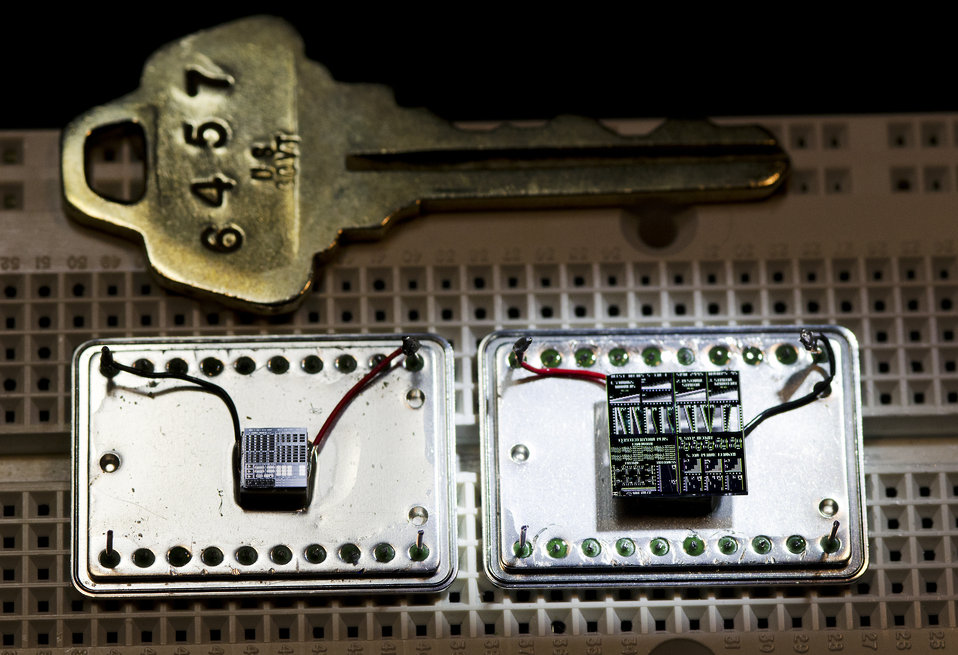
New NIST Reference Materials for MEMS devices are micromachined and further processed to contain miniature cantilevers, beams, stair-like step heights, microscale rulers and test structures for measuring surface-layer thickness. On the left is RM 8096, which was manufactured with an integrated circuit process; on the left is RM 8097, made with a MEMS process.